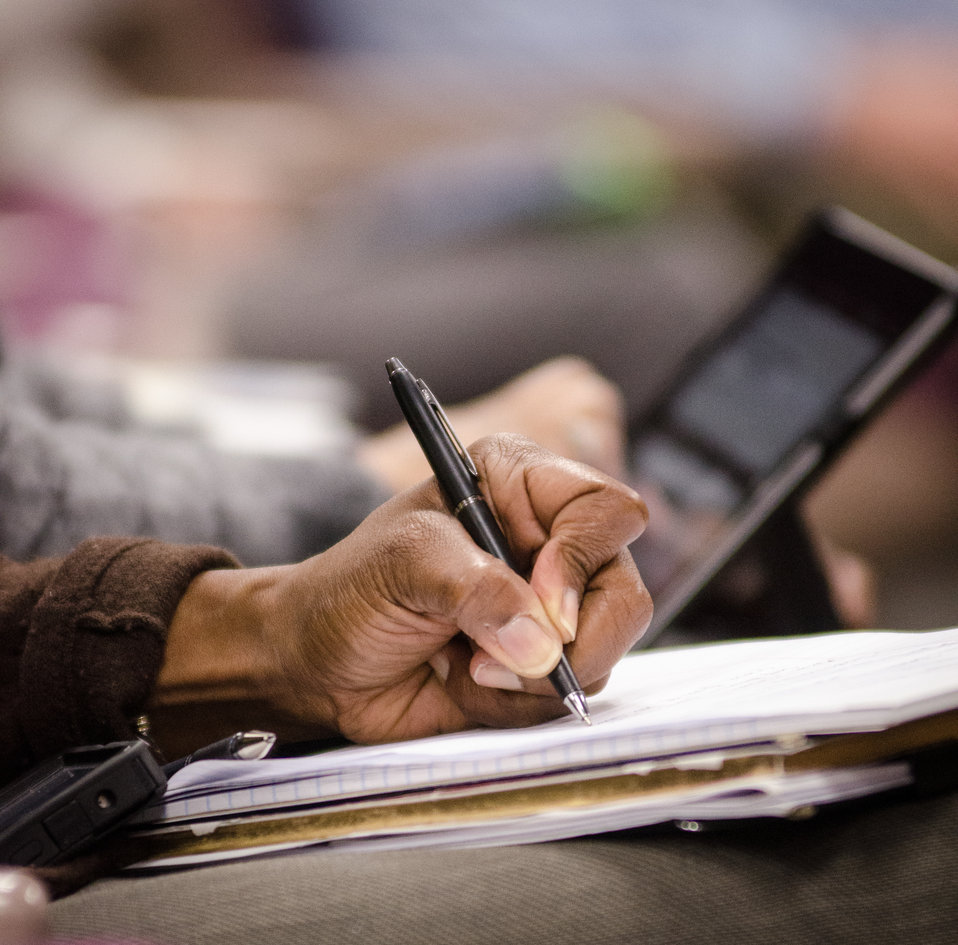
Farmers listened, questioned, took notes and gained a better understanding of resources available to them, at the “Virginia State University (VSU), U.S. Department of Agriculture (USDA) and Virginia Farmers Working Together” outreach workshop in the VSU, L. Douglas Wilder building on Thursday, March 7, 2013, in Petersburg, VA. Farmers shared and learned new ways to produce more and conduct better practices and planning of their family agriculture businesses.